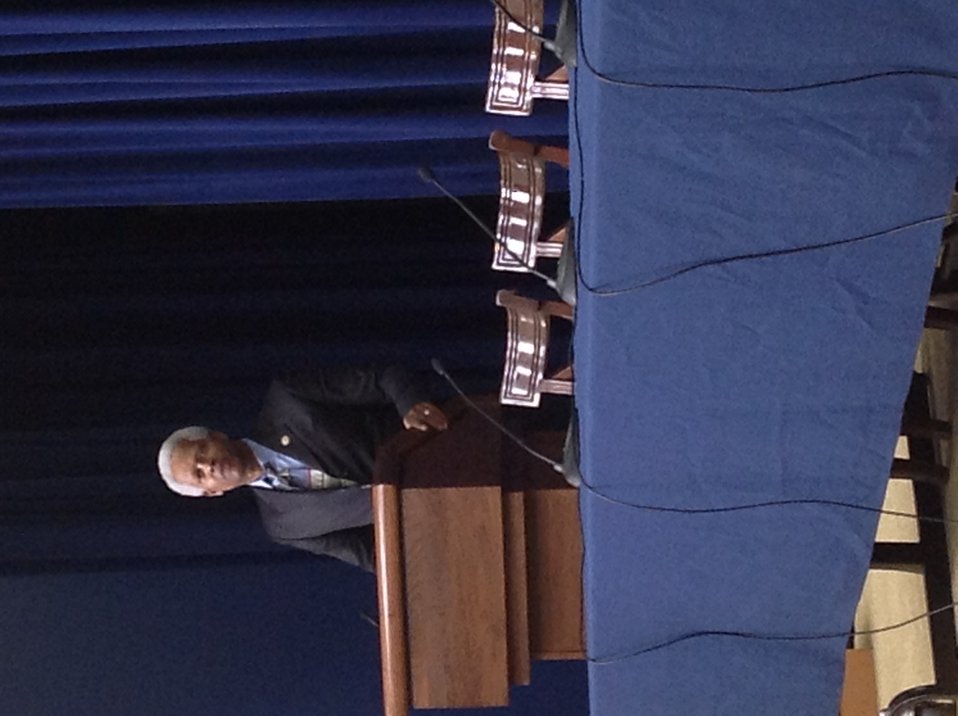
Rep. Hank Johnson

WH 2012 World Hepatitis Day Event